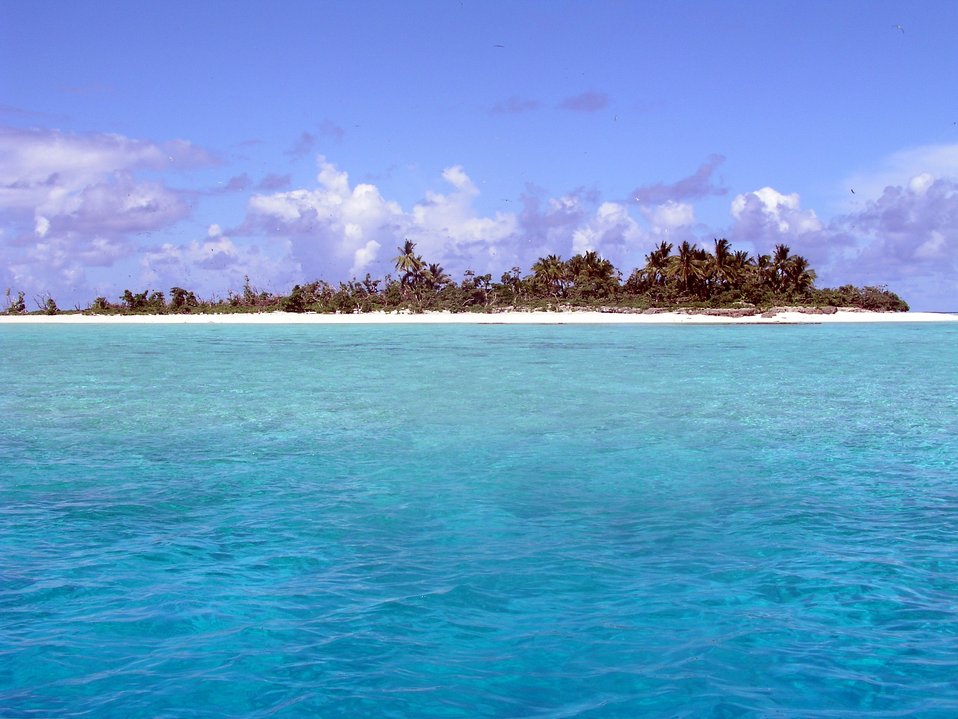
Rose Island, an atoll off the coast of American Samoa.